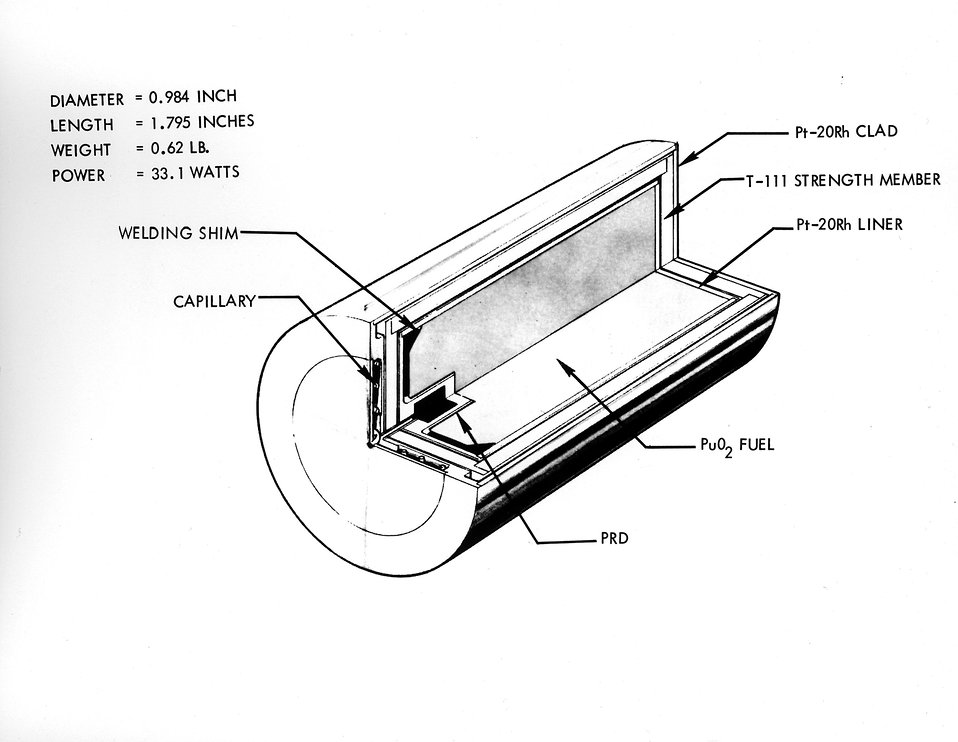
The artificial heart being assessed by the Atomic Energy Commission is powered by a plutonium-238 heat source which has the best isotopic and chemical purity that can be obtained. Circa 1973.